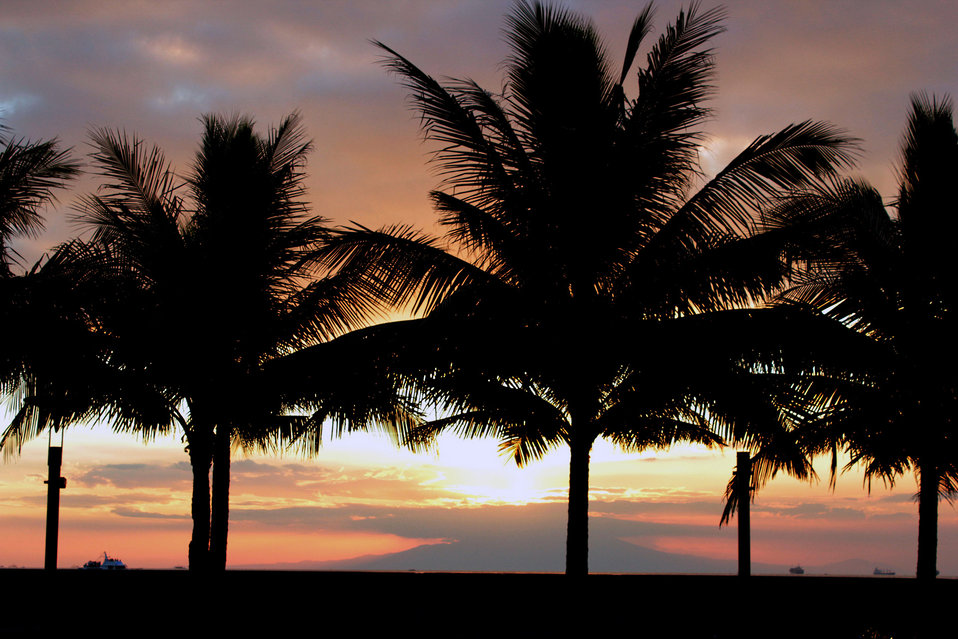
Sunset in manila bay 4

Sunset in manila bay.